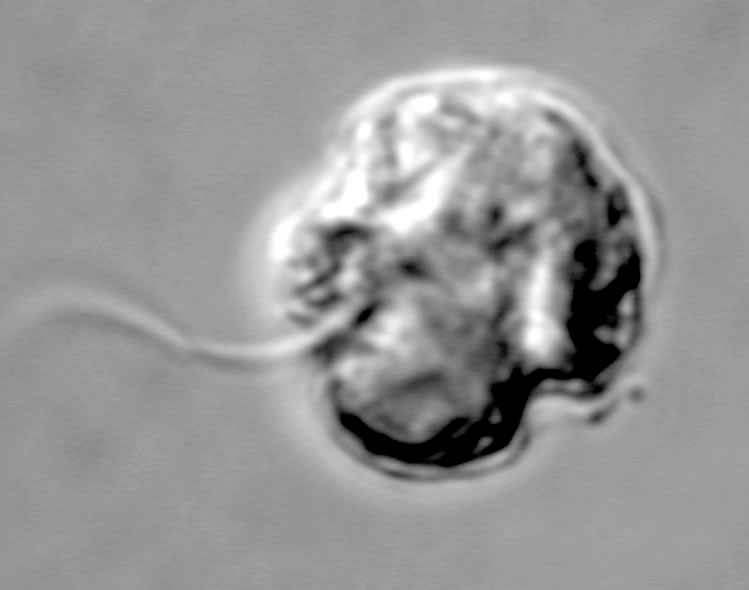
Algae Toxin; Pfiesteria

Differential interference contrast (DIC) image of Pfiesteria organism. The cell is about 10 micrometers across